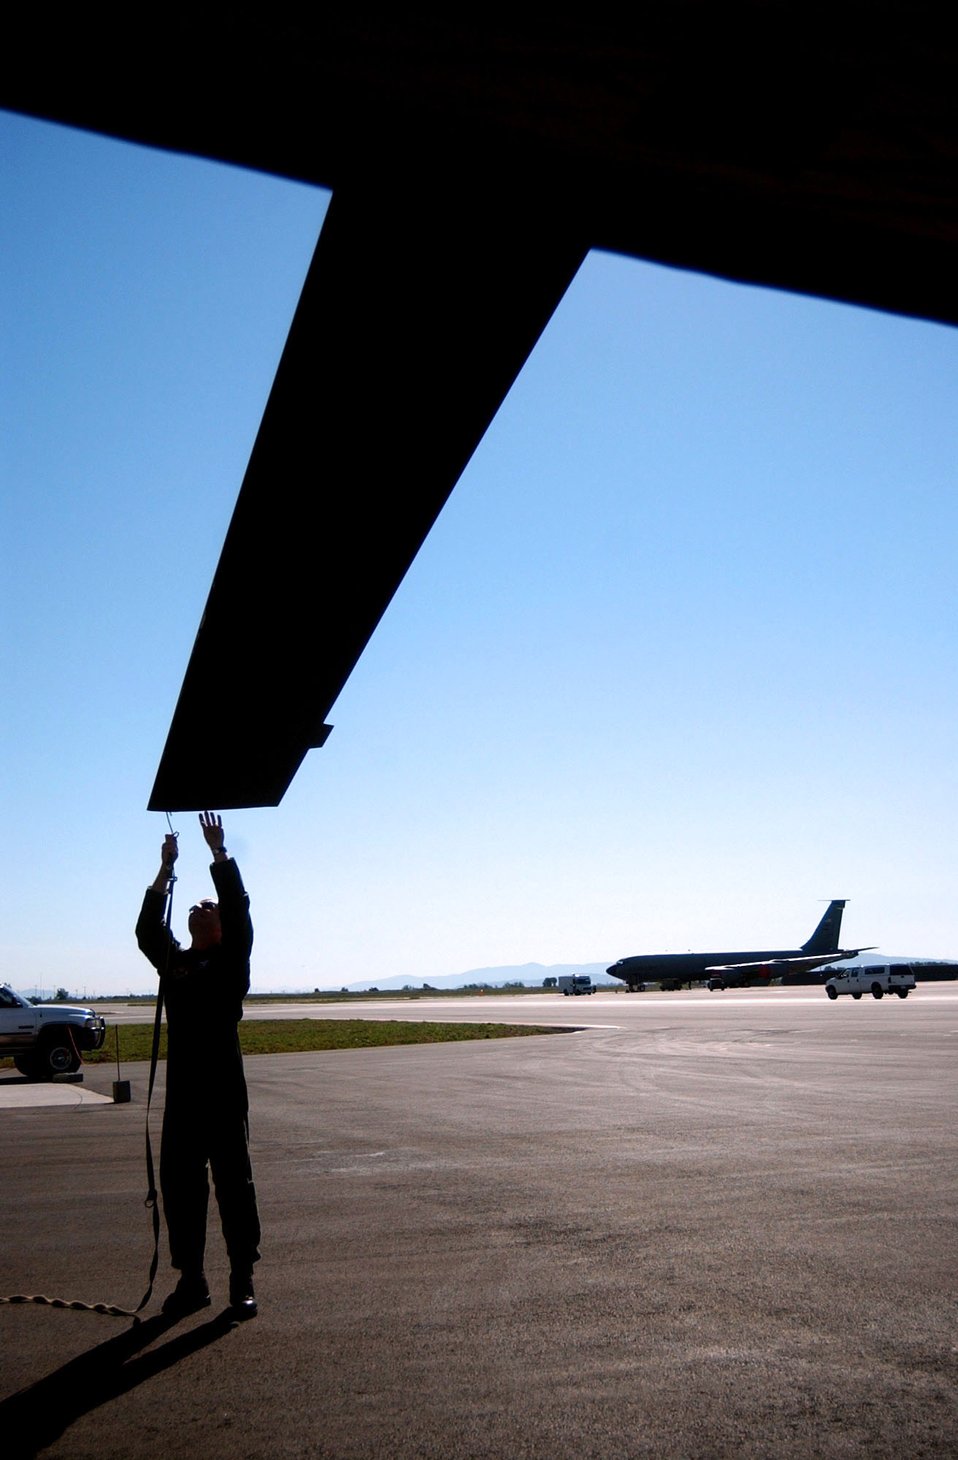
Airmen make two saves in one day

FAIRCHILD AIR FORCE BASE, Wash. -- Capt. Zach Guza disconnects a cable that straps the blades of a helicopter to the ground. The cables prevent the blades from spinning around and causing problems when the winds pick up. Before every flight, the aircrew works through preflight checklists to make sure they do not end up on the wrong end of a search and rescue mission. Captain Guza is a pilot with the 36th Rescue Flight here.